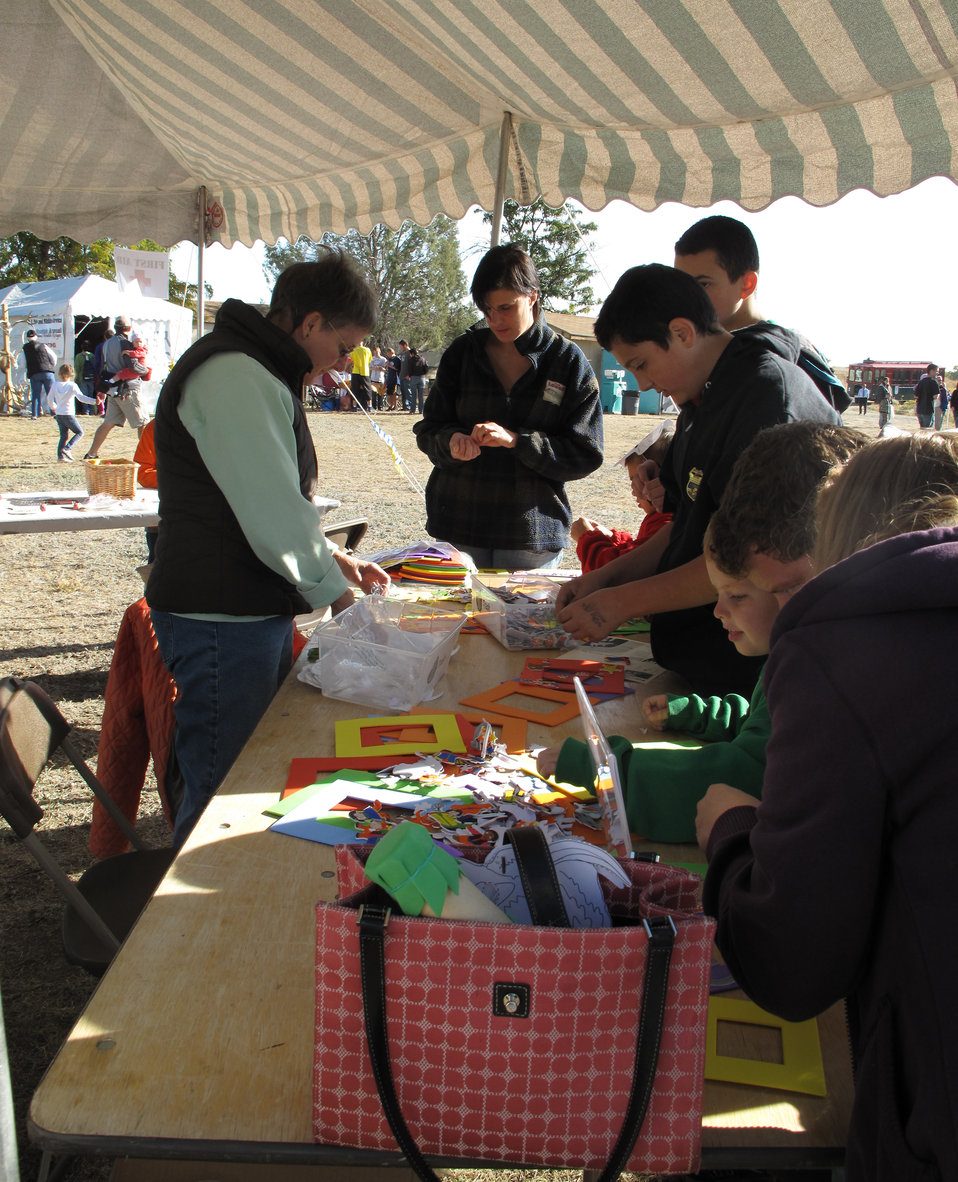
Refuge Round-up 2010

Art booth.